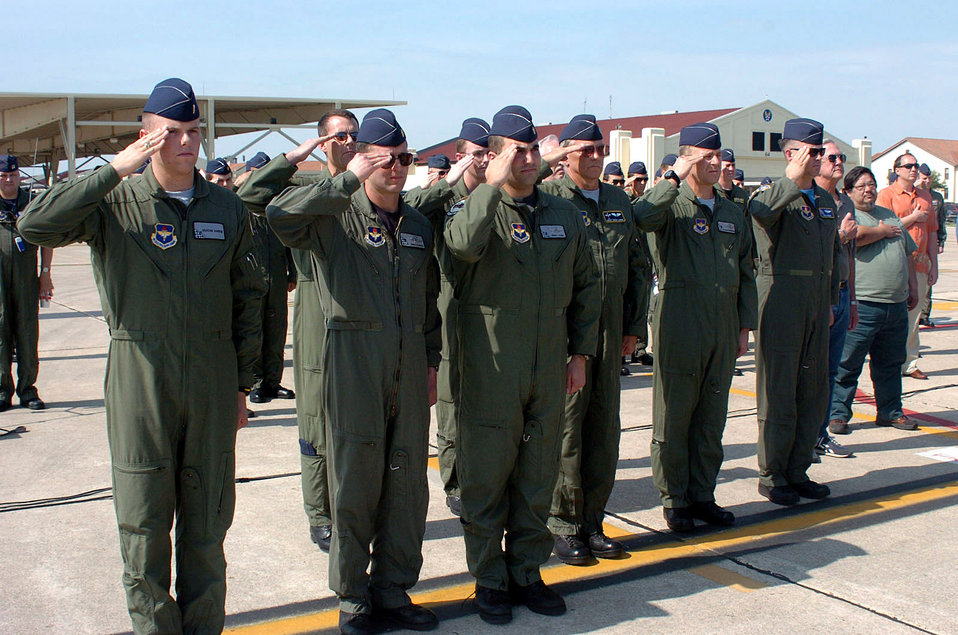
Tweet closes 42-year Randolph career

Members of the 559th Flying Training Squadron and other Randolph members salute the U.S. Flag during the playing of the National Anthem, which opened the base T-37B retirement ceremony April 6.